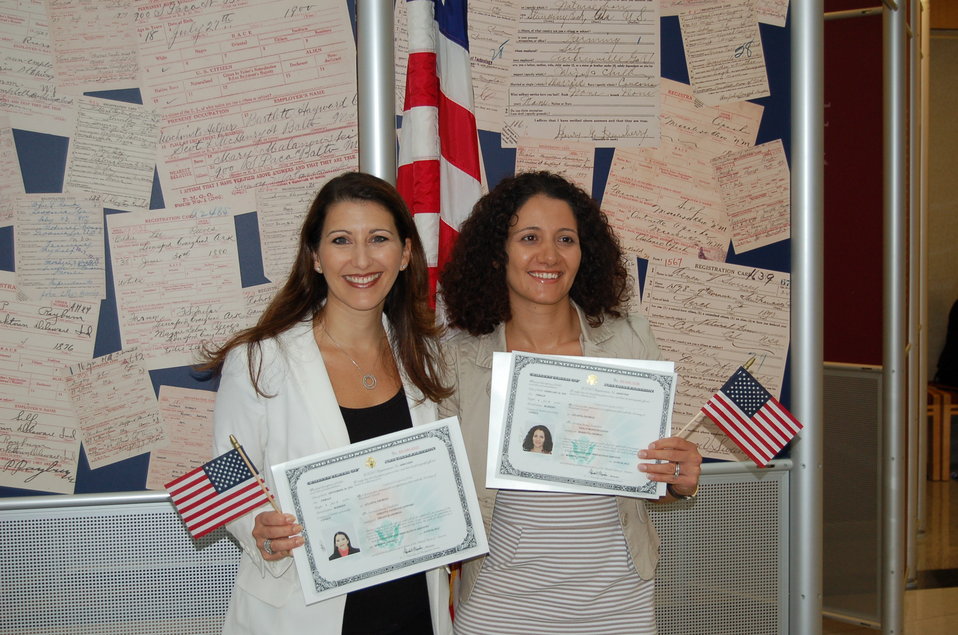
New Citizens